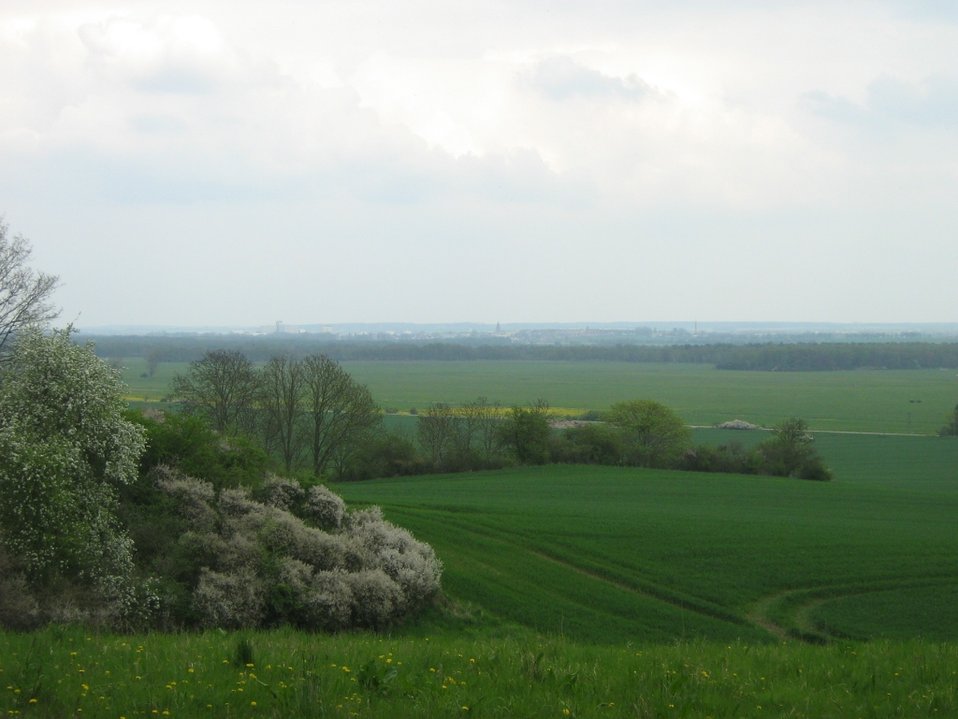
Deutsch: Blick von der Mecklenburger Schweiz (hier dem Pansdorfer Forst) in das Malchiner Becken über das breite Stromtal der Westpeene mit dem heutigen Dahmer Kanal. Im Hintergrund liegt die Stadt Malchin. Das Malchiner Becken, das das Tal der Westpeene, den Malchiner- und den Kummerower See sowie die Ortslage der Stadt Malchin umfasst, ist ein Gletscherzungenbecken der Weichseleiszeit.